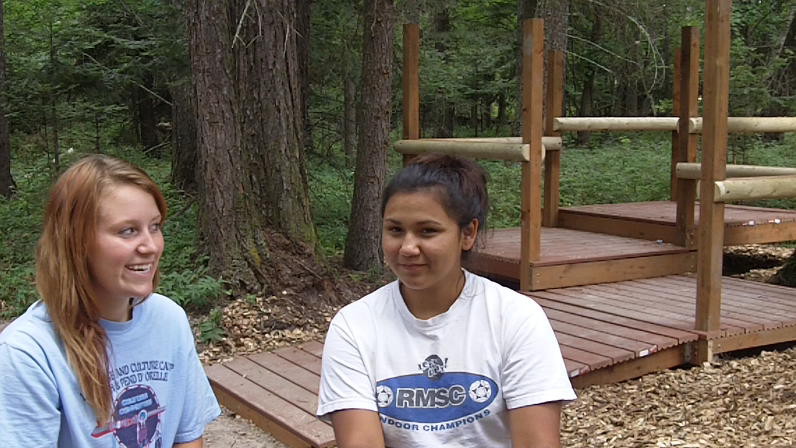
Creston National Fish Hatchery Outdoor Classroom Project

Montana Tribal Youth Conservation Corps
Nature Explore Outdoor Classroom Project
Alexis Paul and Katlin Farmer working at the 'Climbing and Crawling' area.

Evie Bradley/USFWS